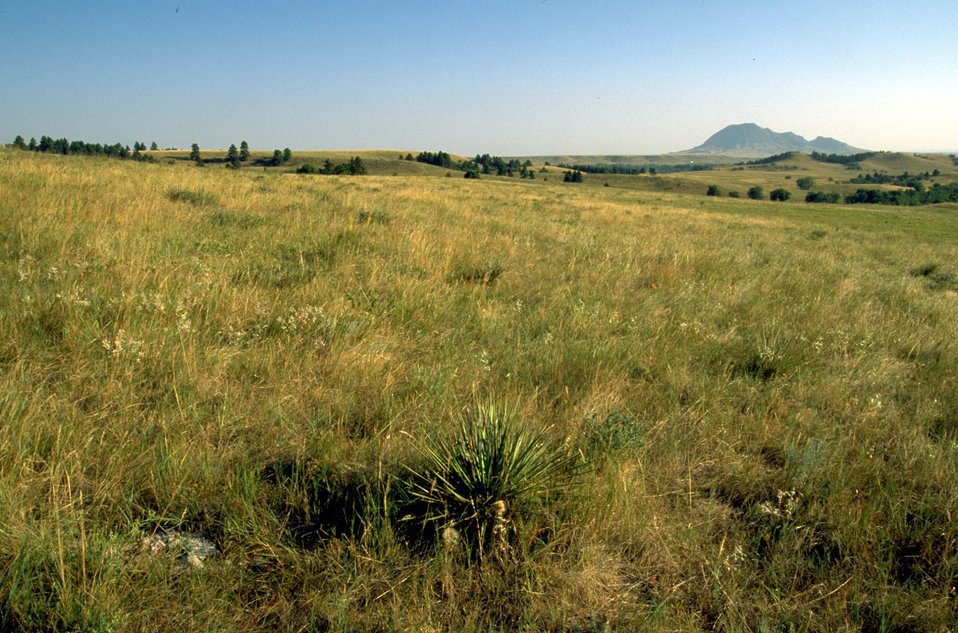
South end of Fort Meade with Bear Butte in the background